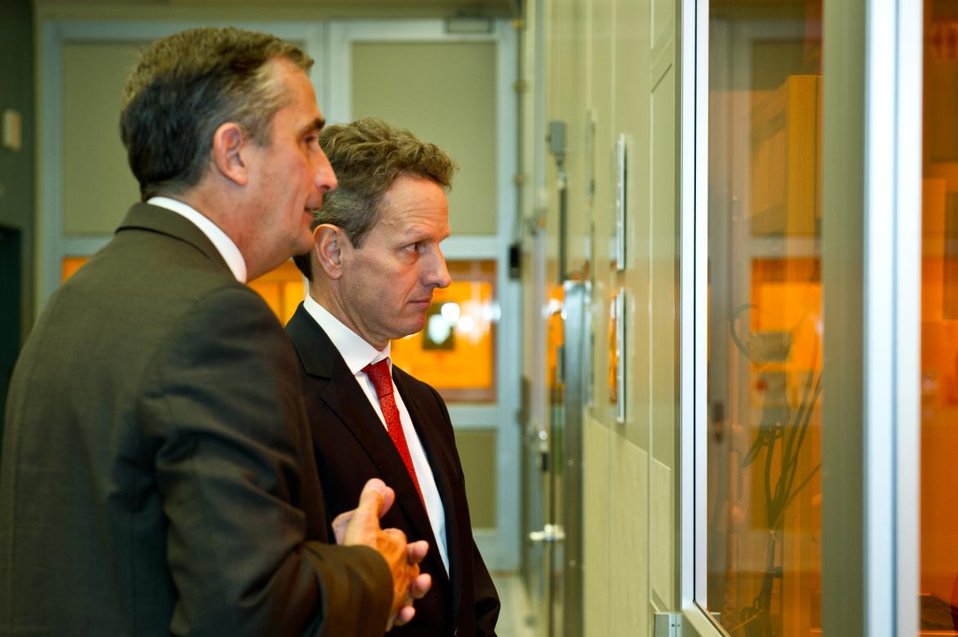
Treasury Secretary Geithner Tours Intel Facilities in Arizona

Senior Vice President Brian Krzanich and Treasury Secretary Tim Geithner look into the clean room where microprocessors are made at Intel's facility in Chandler, AZ. Construction is well underway on a new facility and these kinds of investments are creating thousands of jobs, both in construction now and new high-wage, high-skilled factory jobs over the long term plus even more spinoff jobs across Chandler.